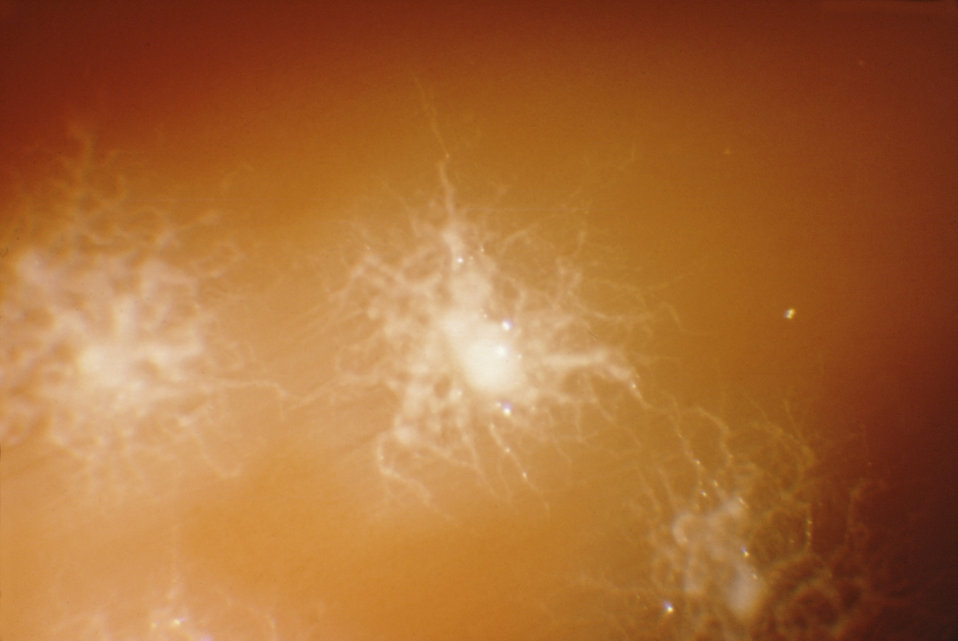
These are Clostridium sporogenes colonies grown on a 48hr blood agar plate; Magnification 15X.